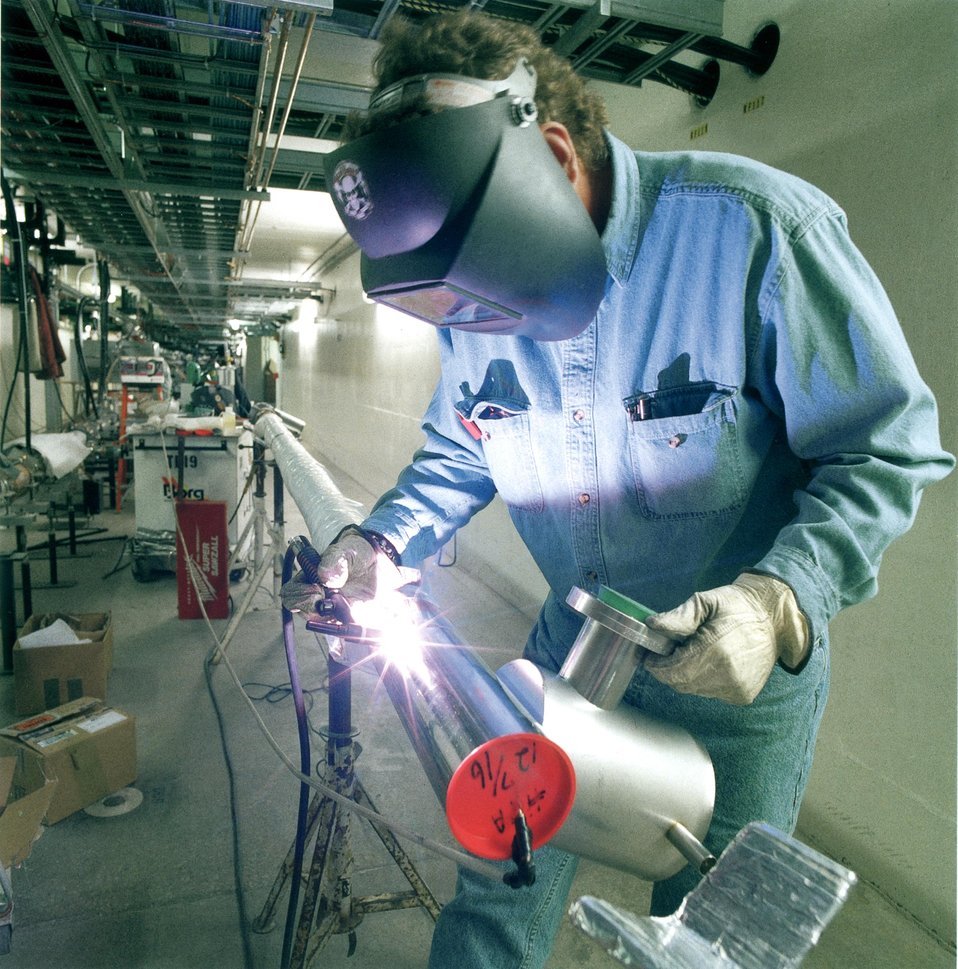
FERMI TECHNICIAN WELDING VACUUM TUBES OF THE ANTIPROTON RECYCLER RING.

DESIGNED TO RECLAIM USED ANTIPROTONS AND STORE THEM FOR MORE THAN TEN HOURS TO BE USED AGAIN, THE ANTIPROTON RECYCLER IS AN INTEGRAL PART OF FERMILAB'S PLAN TO PRODUCE MORE PROTON-ANTIPROTON COLLISIONS.